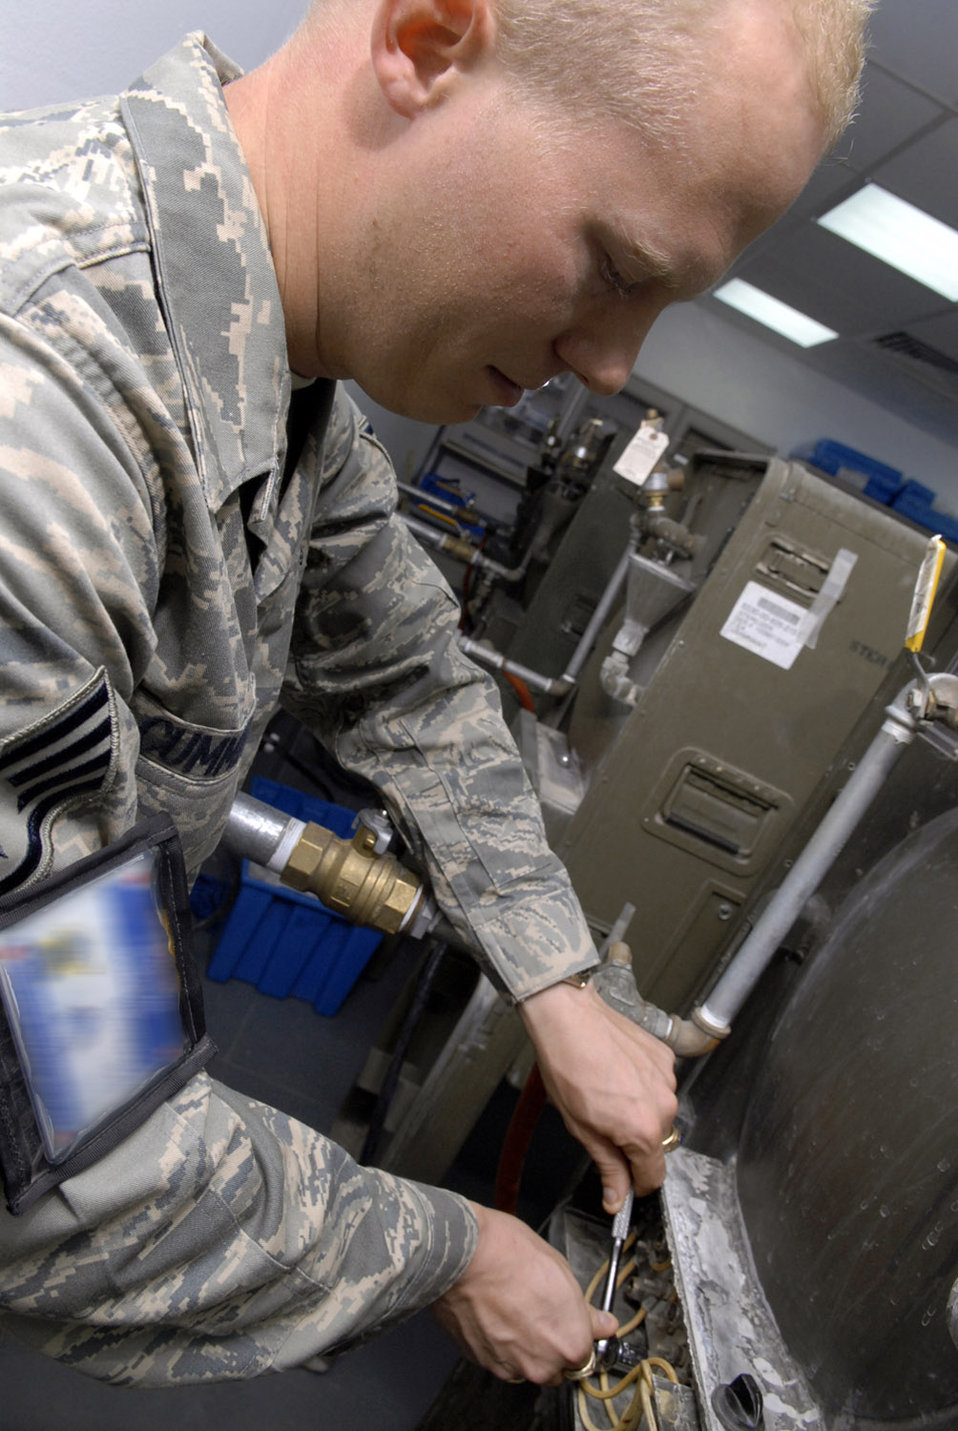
Supporting warrior care

Staff Sgt. Brian Cummings performs preventive maintenance on a sterilizer Oct. 17 in the Air Force Theater Hospital at Balad Air Base, Iraq. Sergeant Cummings and fellow members of the 332nd Expeditionary Medical Support Squadron's biomedical equipment shop are in charge of maintaining all medical equipment in the AFTH.